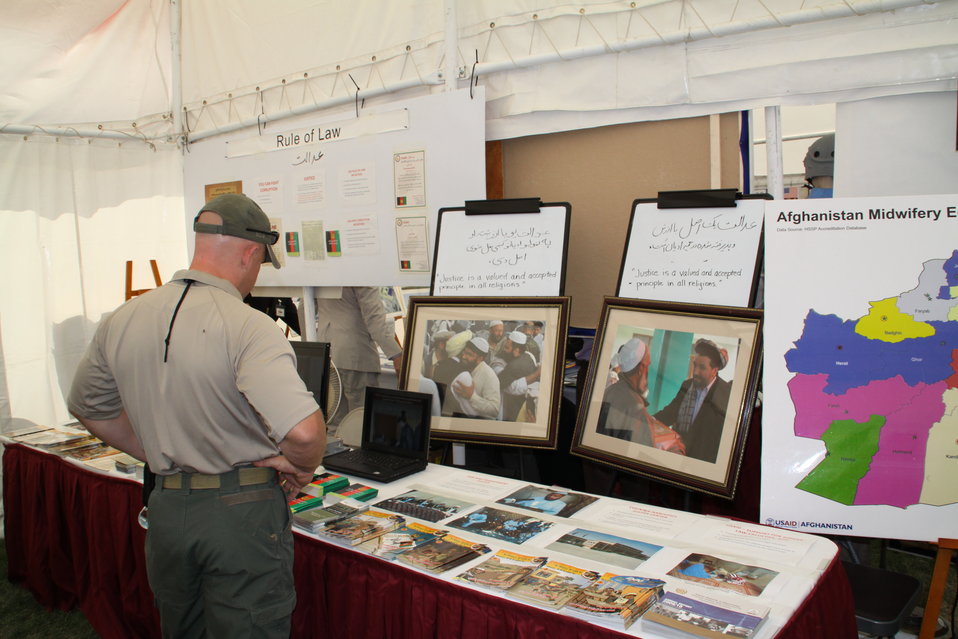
Kabul Official July 4th Celebration